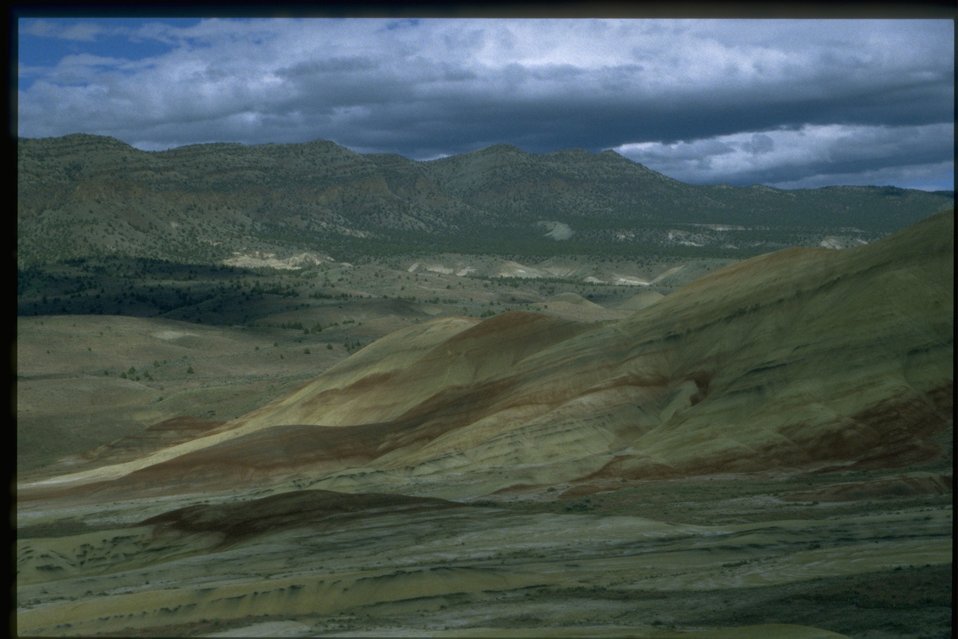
Painted Hills National Monument (Mitchell, Oregon).